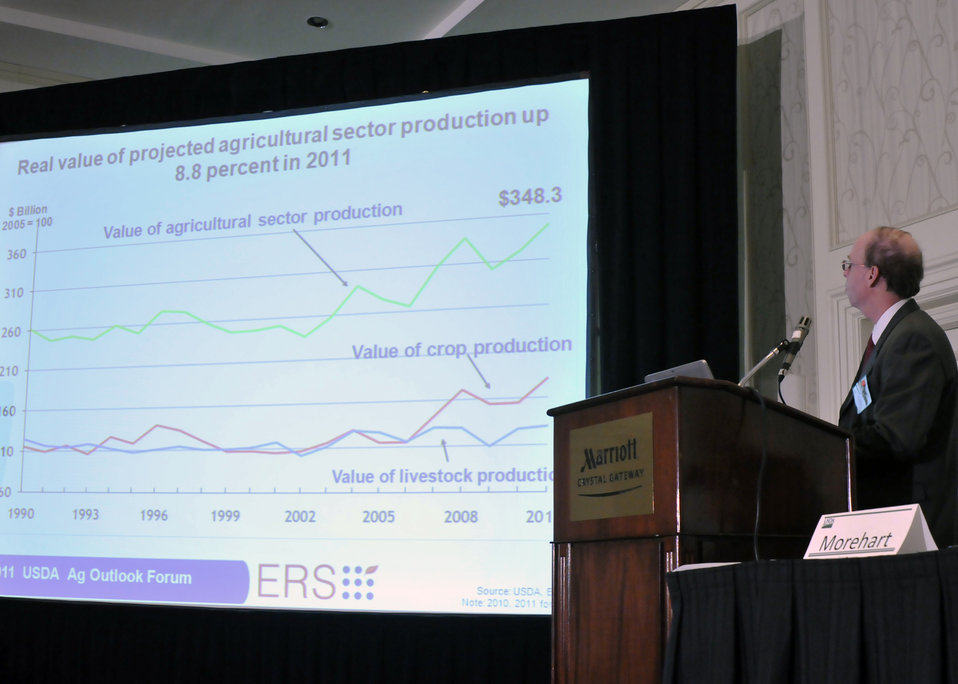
Timorhy Park, Economist, Farm and Rural Business Branch, Resources & Rural Economics Division, Economic Reserch Service, U.S. Department of Agriculture makes his presentation on Income Outlook for U.S. Farm Sector in 2011, at the Land Tenure Issues & Income breakout session at the World Agriculture Outlook Board Forum in Arlington, VA, on Thursday, February 24, 2011.